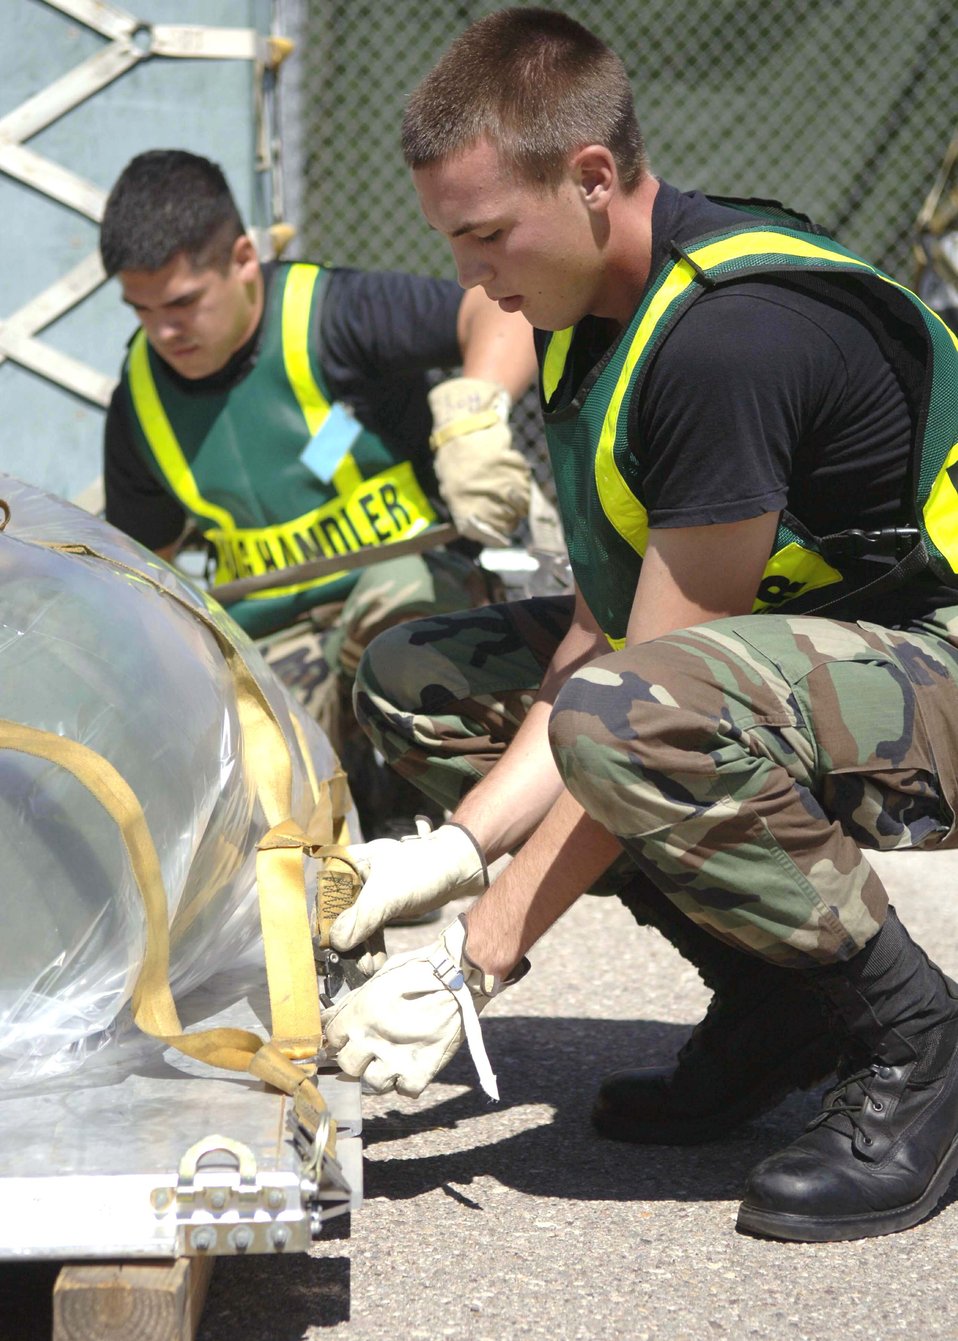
Bushwacker 06-04

Airman 1st Class Jeff Nobel and Senior Airman Juan Hernandez secure a net onto a pallet during Exercise Bushwacker 06-04 Sept. 15 at Davis-Monthan Air Force Base, Ariz. Airman Nobel is with the 355th Equipment Maintenance Squadron and Airman Hernandez is with the 355th Services Squadron.